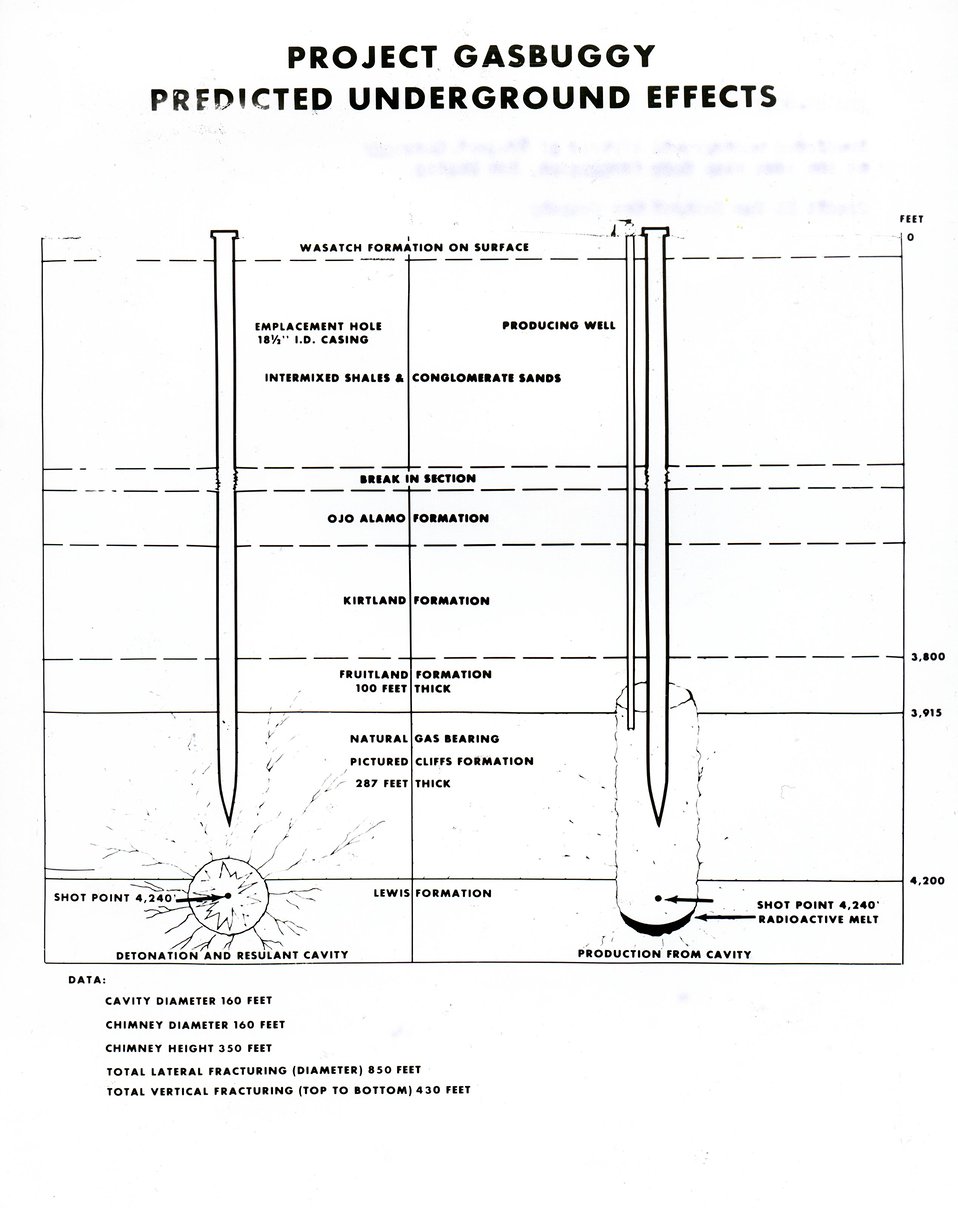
Predicted underground effects of Project Gasbuggy at the test site near Farmington, New Mexico. Circa 1967.